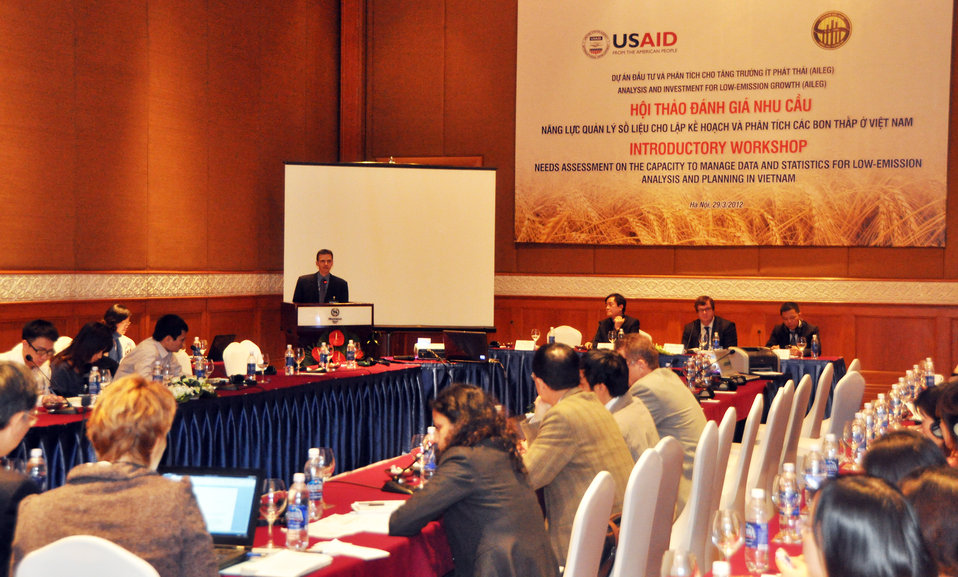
Analysis and Investment of Low Emission Growth in Vietnam Workshop